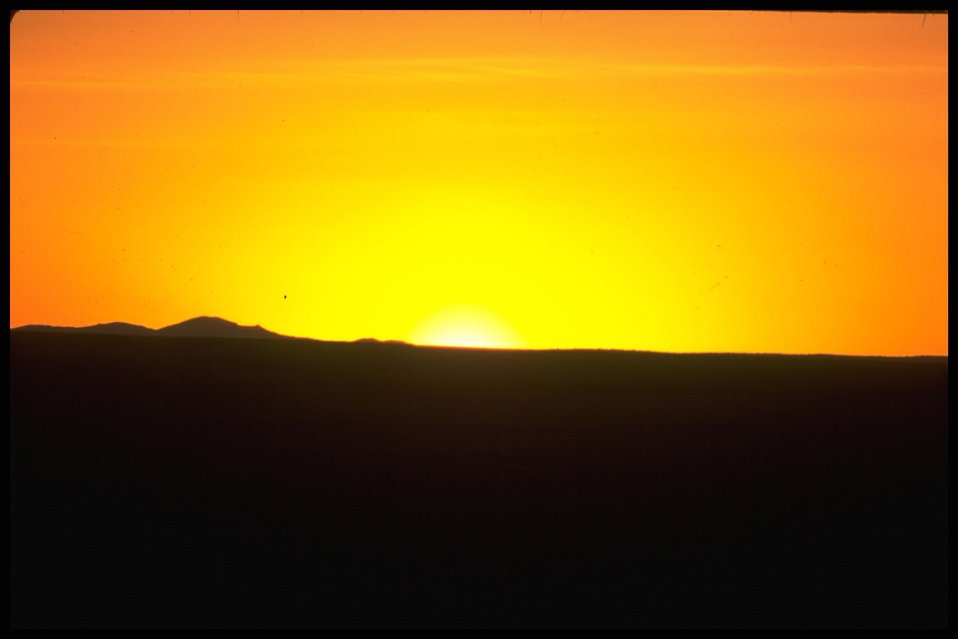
Sunrise at Lakeview District.